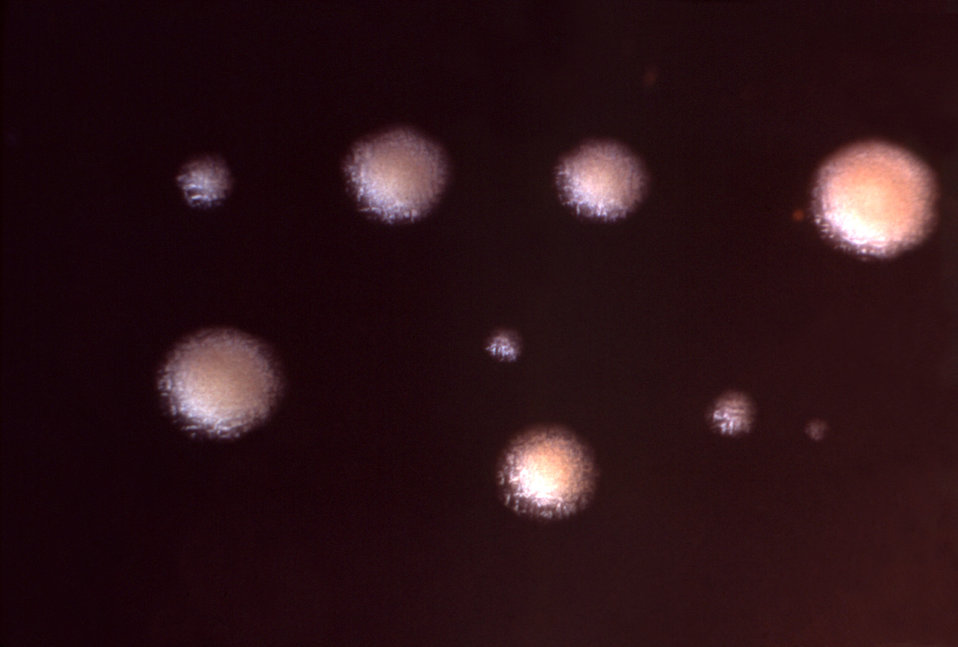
Under a low magnification of 5X, this photograph depicted a number of Legionella pneumophila colonies that had been cultivated on Feeley-Gorman (FG) agar. Note the 'cut-glass' appearance displayed by the round, off-white colored colonies. FG agar is used particularly in the cultivation of Legionella spp. bacteria, and is composed of casein (acid hydrolyzed), agar, beef extract, starch, cysteine and iron (III) pyrophosphate (Fe4(P2O7)3).